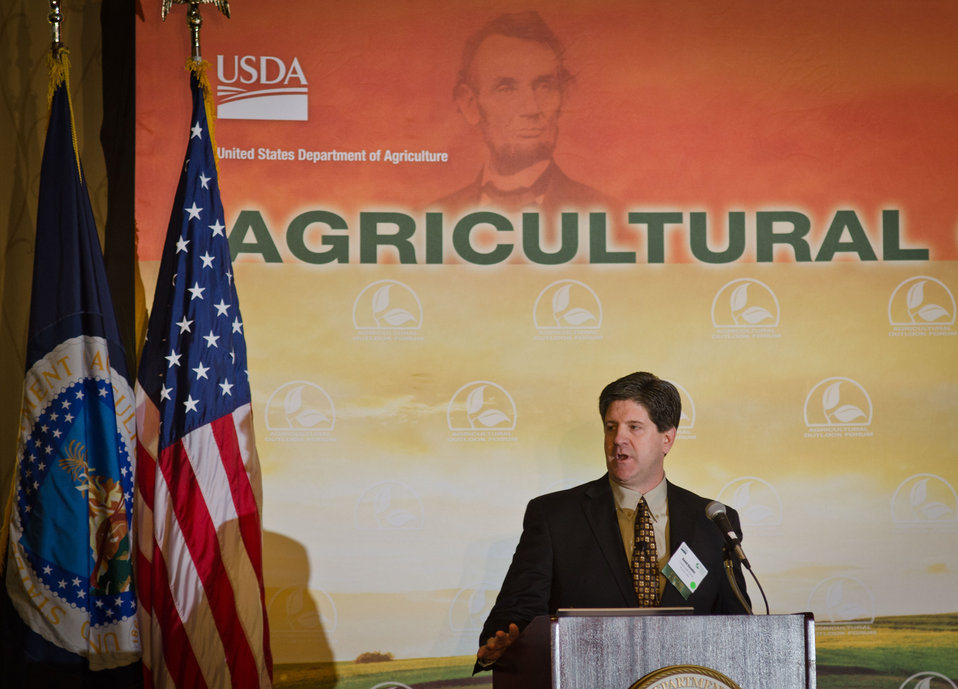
Cargil AgHorizons President David Baudler speaks at 2013 Agricultural Outlook Forum, held at the Crystal Gateway Marriott Hotel, Arlington, Virginia on Thursday, Feb. 21, 2013. This annual Forum brings together producers, policymakers, and business, government, and industry leaders to meet, exchange ideas, and discuss timely agriculture issues.